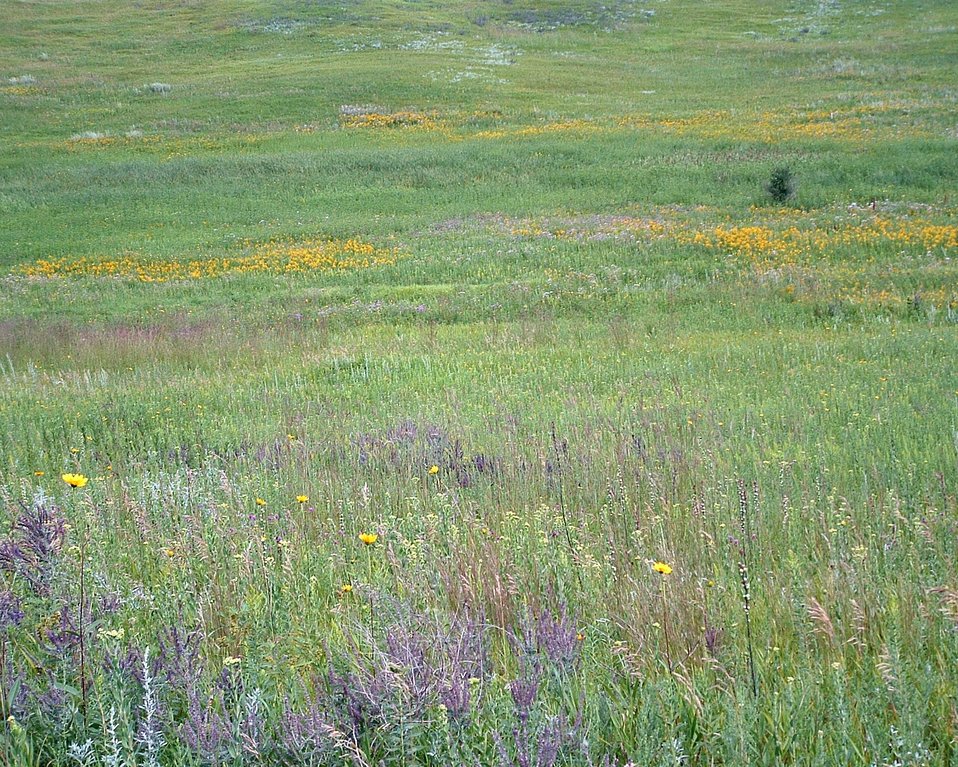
Native Prairie Colors

Native prairie is full of greens, golds, pinks, and purples. The colors change with the seasons. This photo was taken on the northeast side of Waubay National Wildlife Refuge in August of 2012.